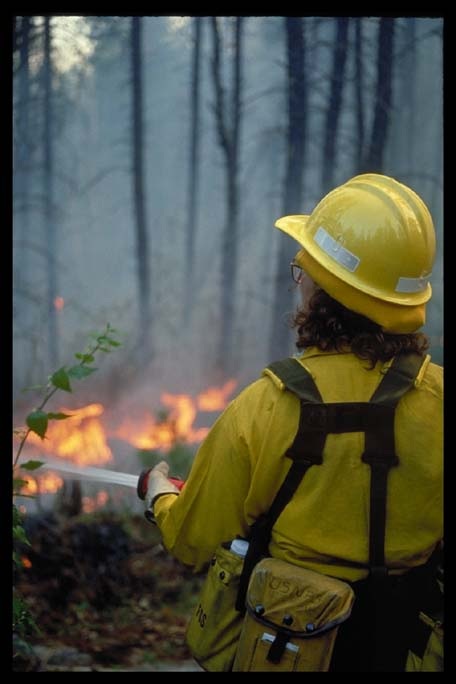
Wildland firefighter